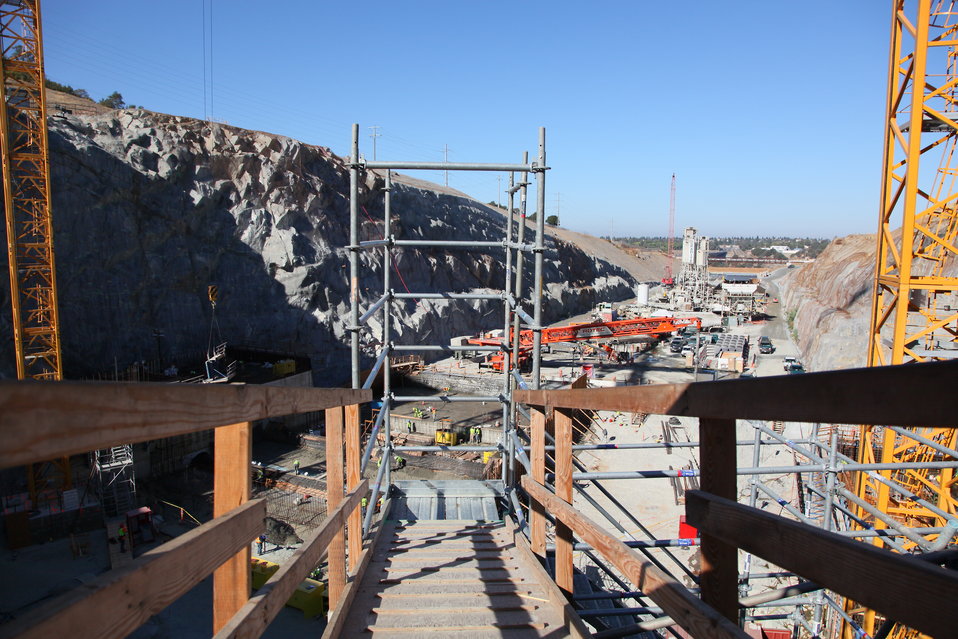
Safety a priority at Folsom Dam project

Contractors for the U.S. Army Corps of Engineers Sacramento District build and provide a safe
passage within the construction zone at the auxiliary spillway using walkways and scaffolding at the Folsom Dam in Folsom, Calif., Sept. 19, 2012. Safety at the job site is a number one priority; equipment and personal safety are a requirement. The Sacramento District is building the spillway in cooperation with the U.S. Bureau of Reclamation, the Central Valley Flood Protection Board, and the Sacramento Area Flood Control Agency to improve the safety of the existing dam and reduce flood risk for the greater Sacramento area.